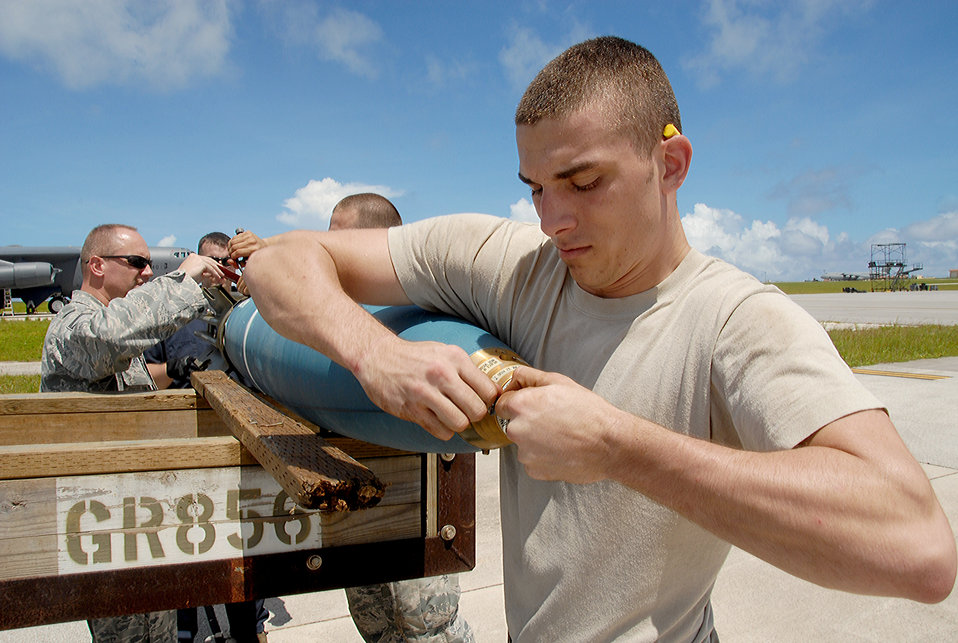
Valiant Shield joint exercise

Staff Sgts. Dustin Hyden and Doyle Atkinson upload Mk 62 Quickstrike naval mines onto a B-52 Stratofortress during Exercise Valiant Shield Sept. 14, 2010, at Andersen Air Force Base, Guam. The joint exercise focuses on integrated joint training and interoperability among U.S. military forces. The Airmen are assigned to the 36th Expeditionary Maintenance Squadron.